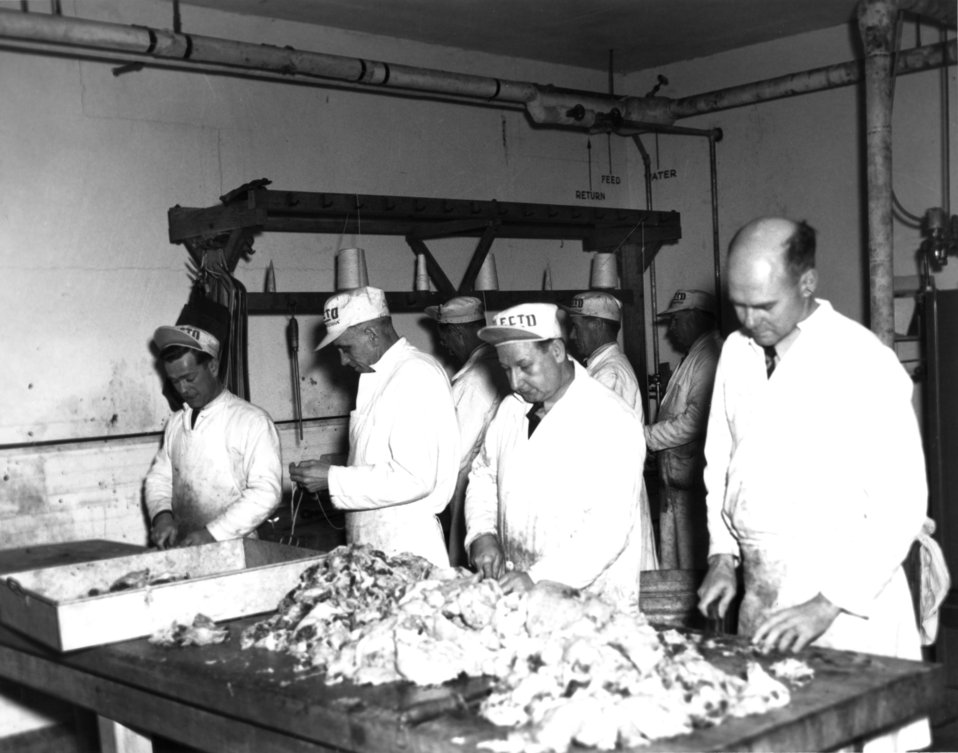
Business activity at Oak Ridge